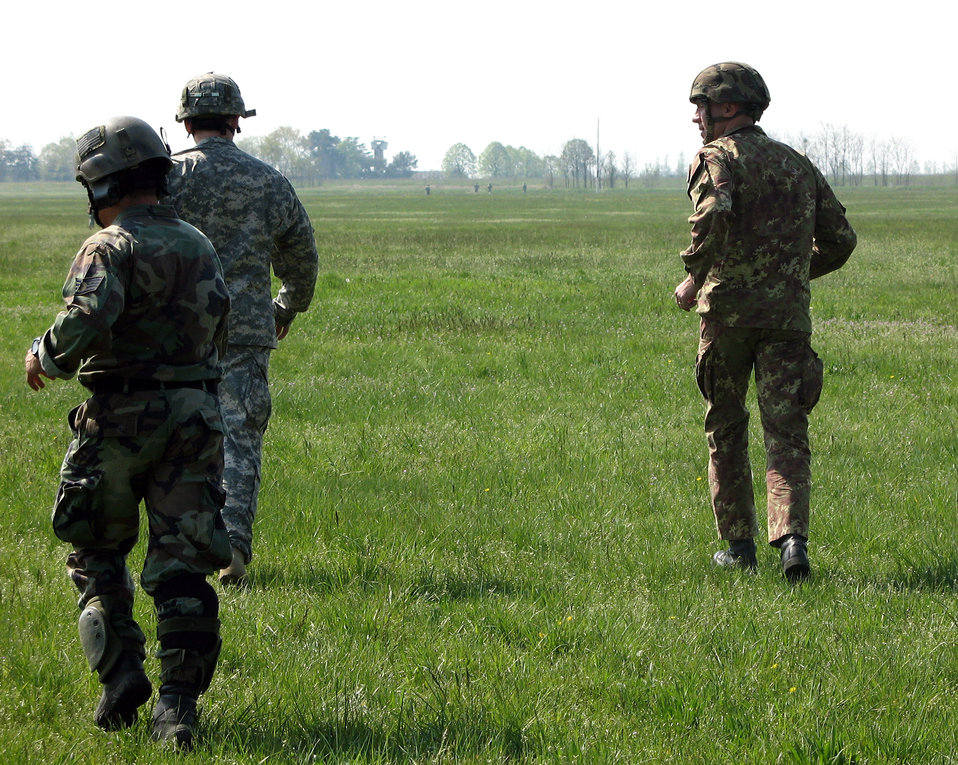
American, French forces join in jump training

An Airman, Soldier and a French paratrooper run to their rally point after parachuting from a C-130 Hercules at Aviano Air Base, Italy. French paratroopers earned U.S. Army parachute badges after the jump for their past and continued efforts alongside multi-national forces.